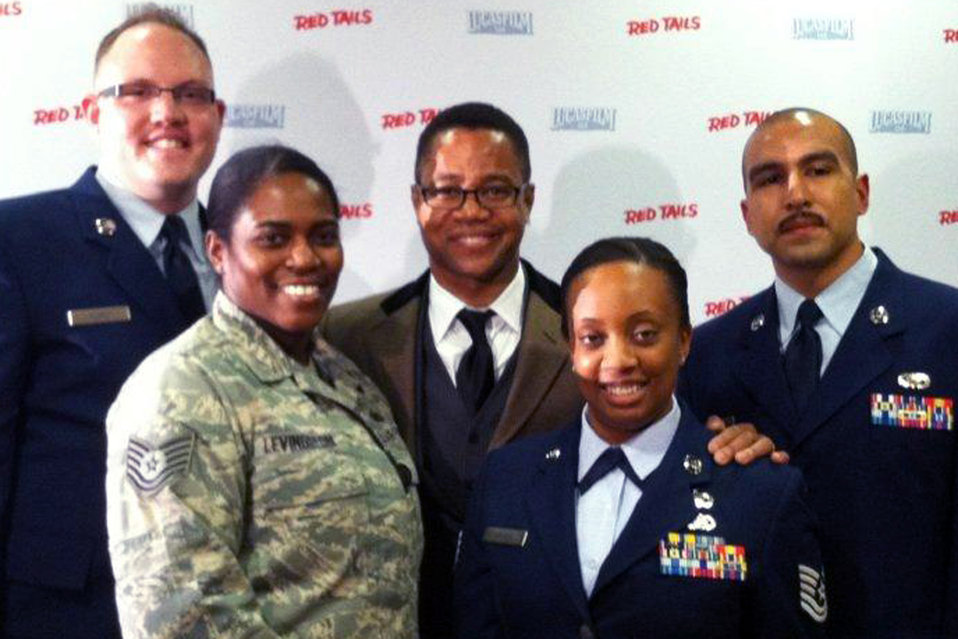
Cuba Gooding Jr. (center) poses with members of an Air Force news team before screening a documentary about the Tuskegee Airmen Nov. 10, 2011, at the Pentagon.